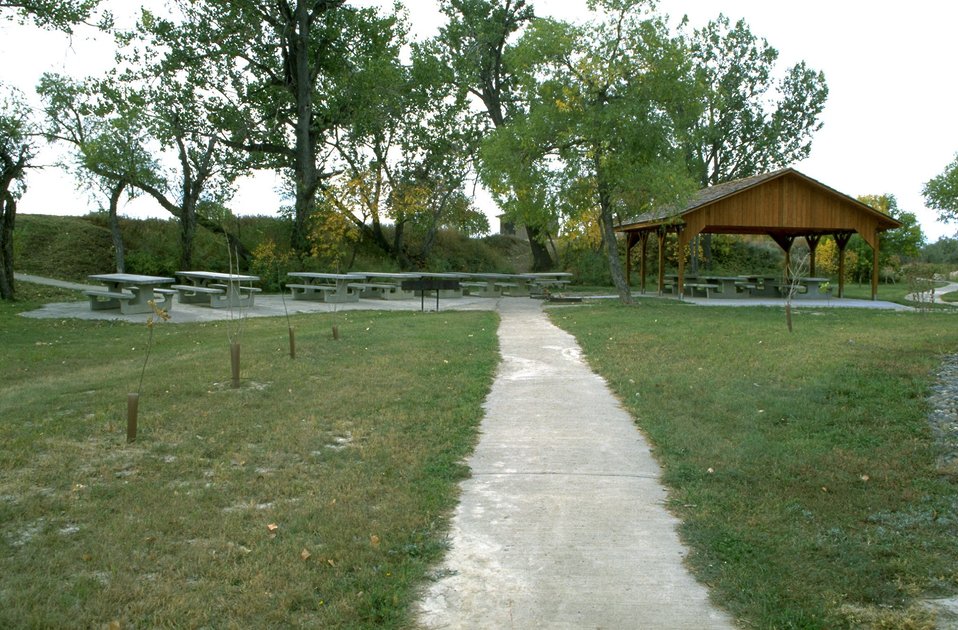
Group Picnic Shelter at Matthews Recreation Site